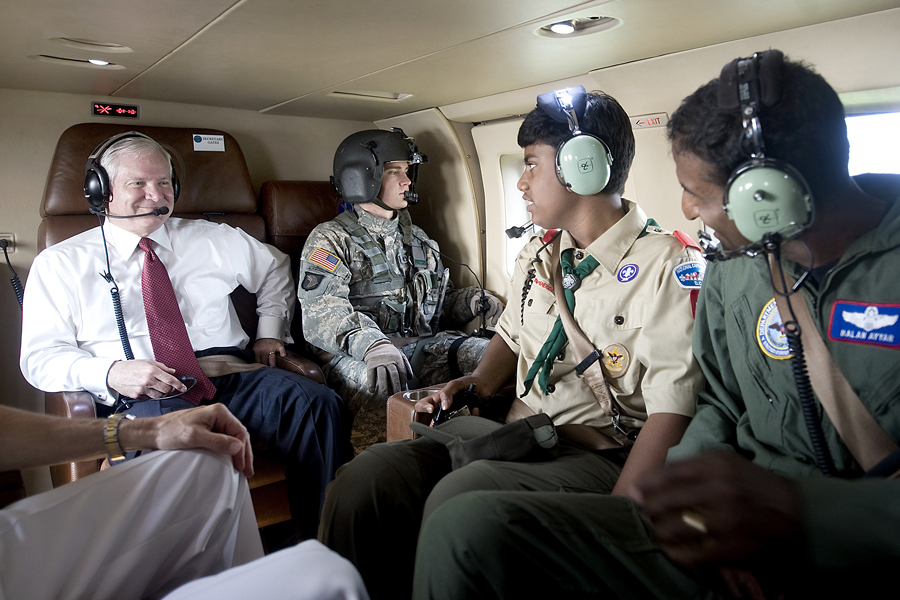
Boy Scout Jamboree

Defense Secretary Robert M. Gates chats with Boy Scout Vanas Ayyar and his father, Air Force Col. Balan Ayyar, on board a helicopter flying to the 2010 National Boy Scout Jamboree at Ft. AP Hill, Va., July 28, 2010. The massive group of Boy Scouts from throughout the United States came to the 12,000-acre site for 10 days to celebrate the organization's 100-year anniversary.